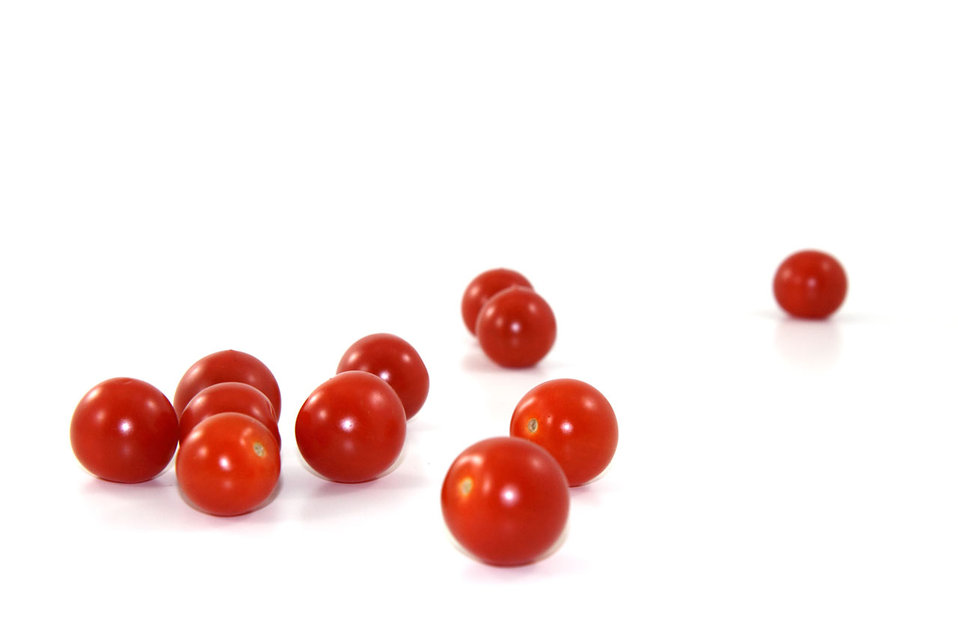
Tomatoes

Several cherry tomatoes on white background.